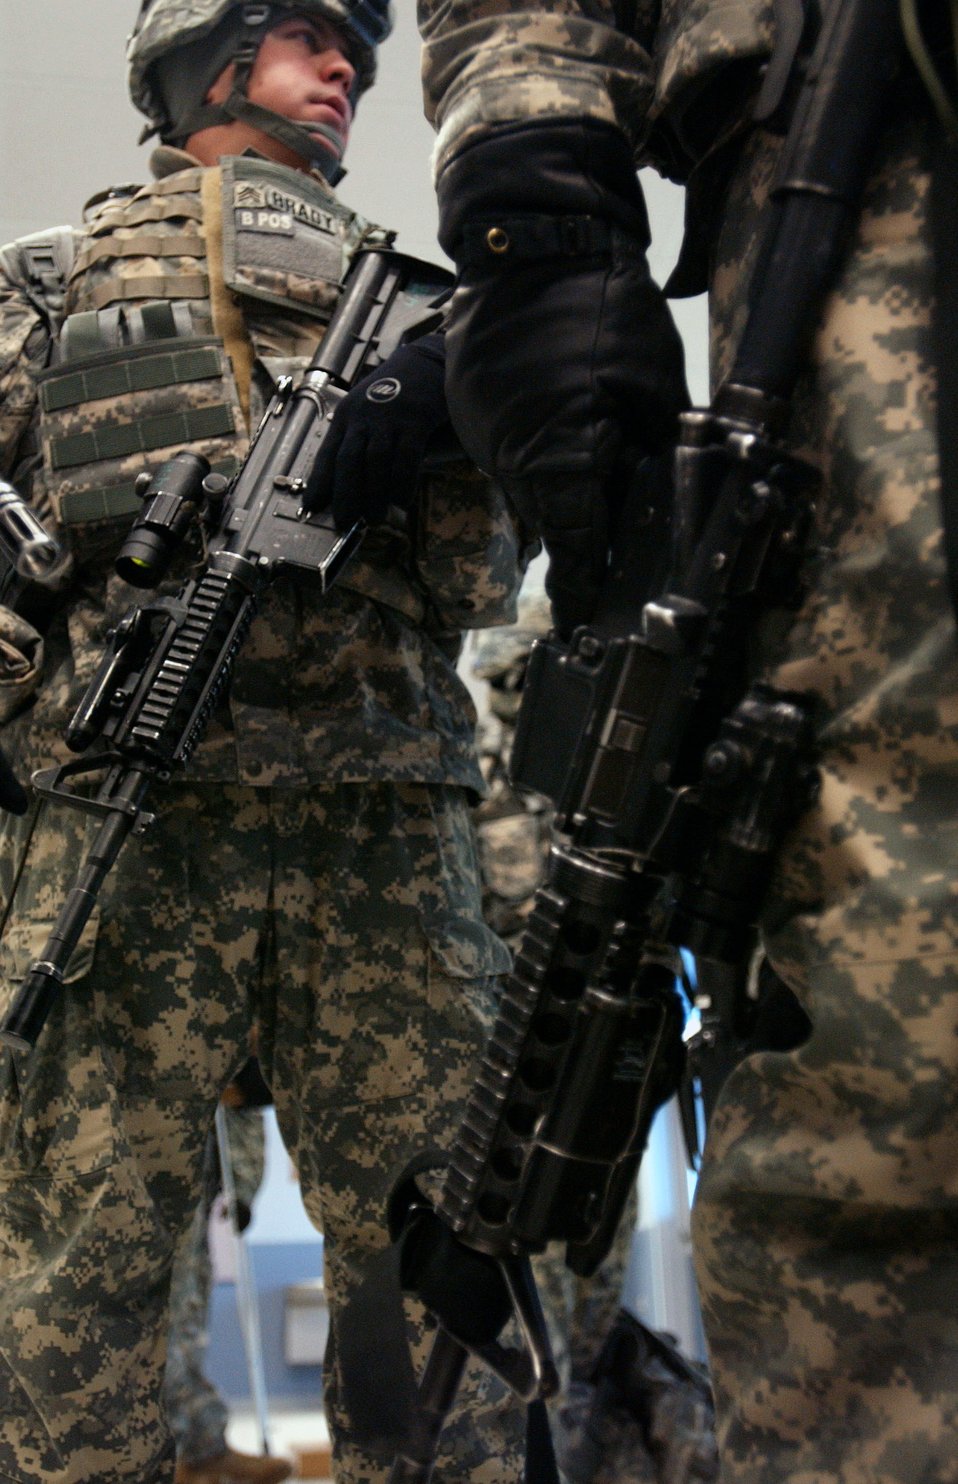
Air Force, Army forces join to support exercise

Members of a combat team from the Army's First Stryker Brigade at Fort Wainwright, Alaska, prepare for their departure from the Joint Mobility Center at Eielson Air Force Base, Alaska, to South Korea in support of a Foal Eagle exercise. The Soldiers will be transported to the exercise by aircrews from the 517th Airlift Squadron at Elmendorf AFB, Alaska, in C-17 Globemaster IIIs.